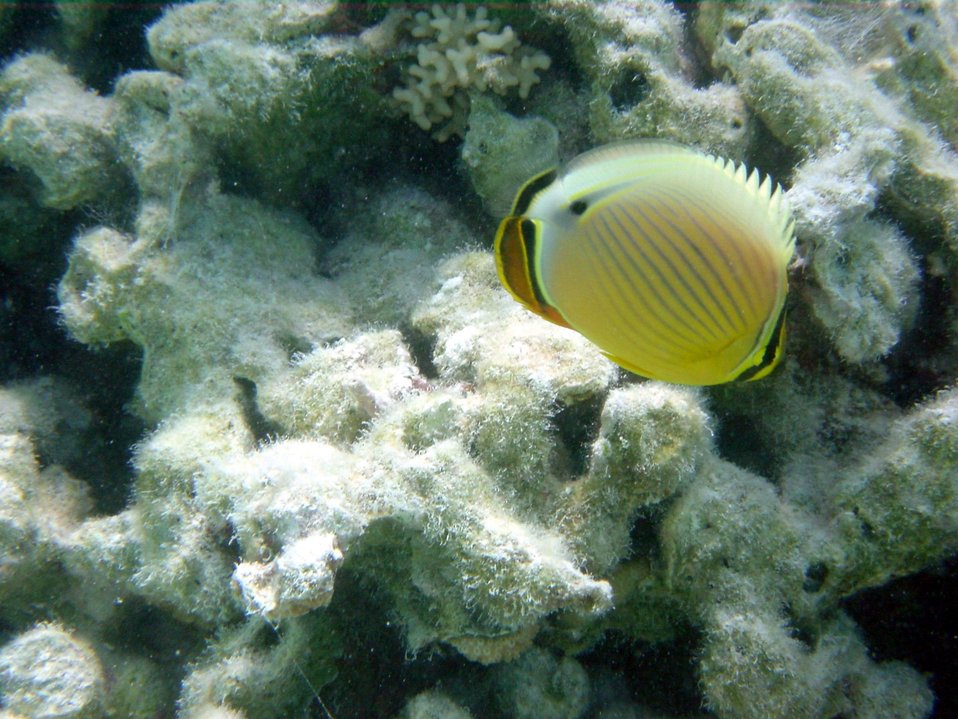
Oval butterfly fish (Chaetodon lunulatus).